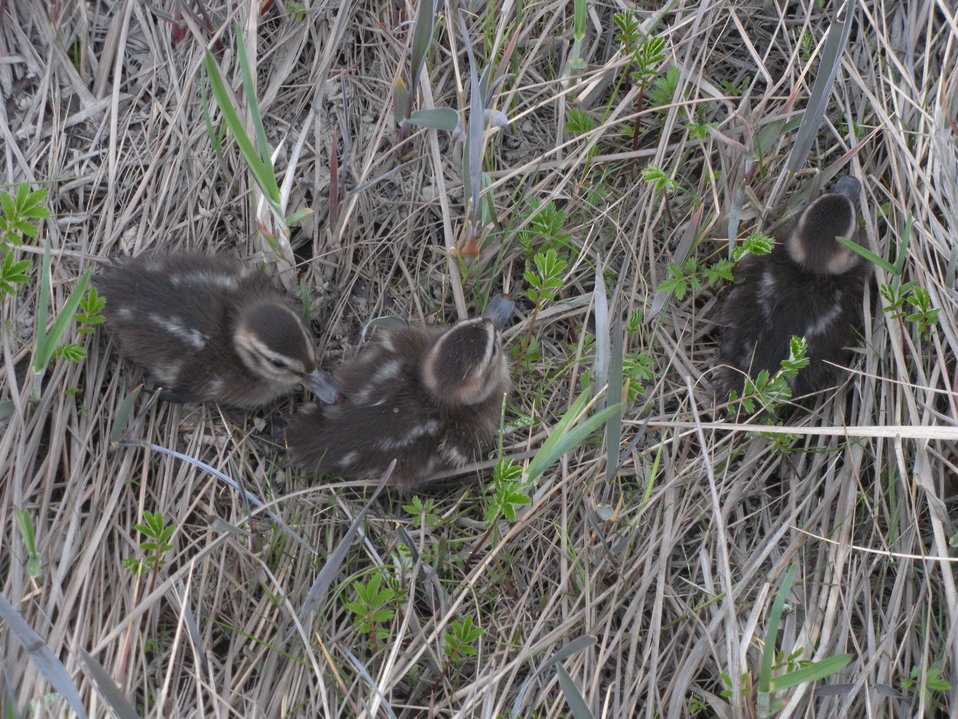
Pintail ducklings

Yukon Delta NWR